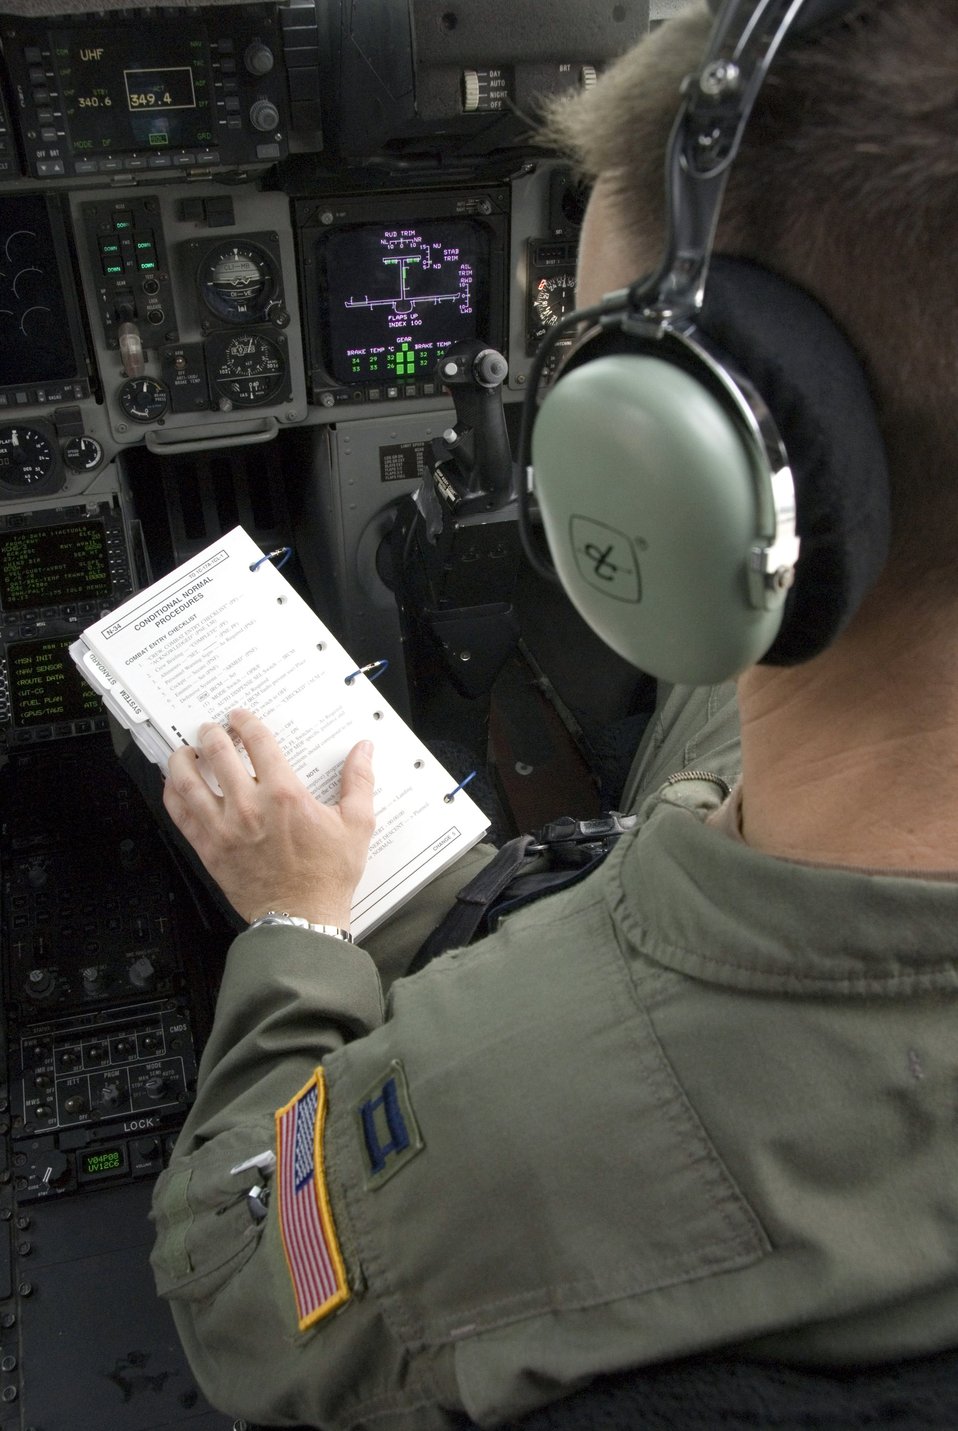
New C-17 checklist reduces redundancies

Capt. Jason Hughes reviews a checklist during a preflight check of a C-17 Globemaster III at Charleston Air Force Base, S.C., prior to takeoff. Captain Hughes is a pilot in the 17th Airlift Squadron.